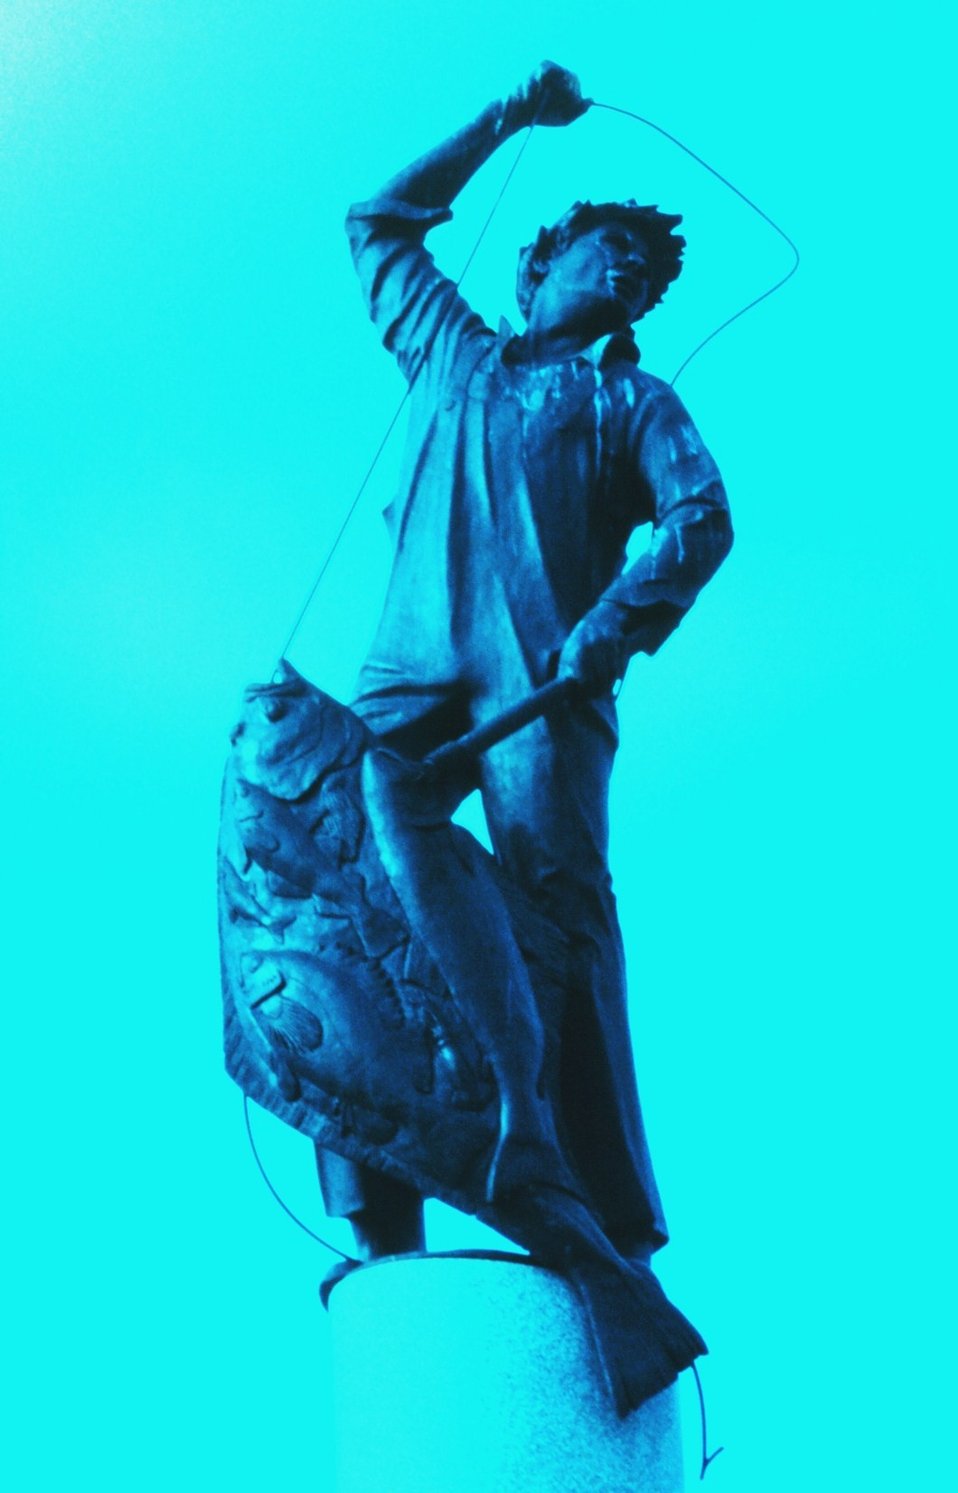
Statue of halibut fisherman adorning top of Seattle's Fishermen's Memorial